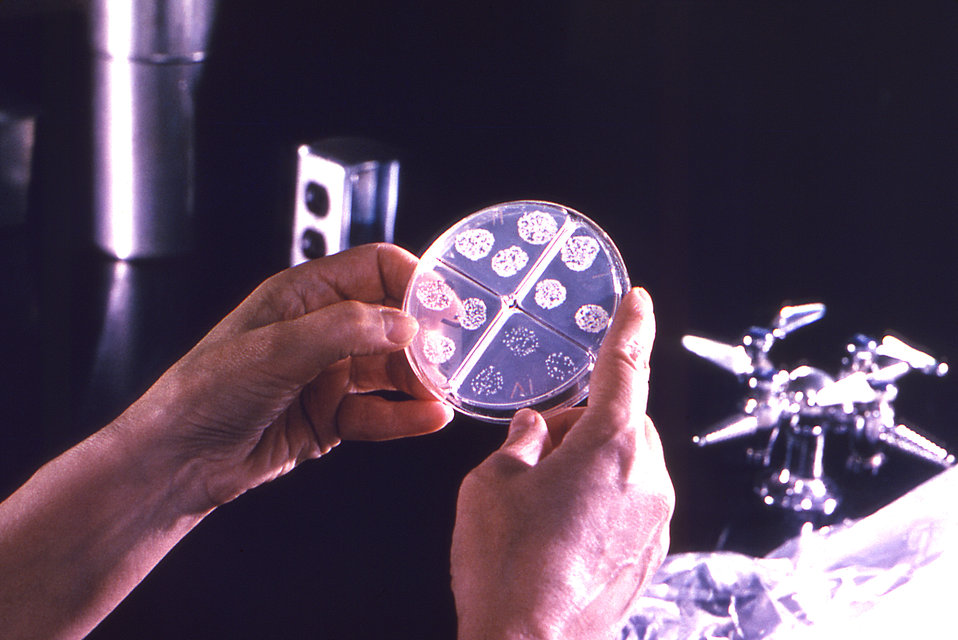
This image depicts the hands of a laboratorian holding a quad plate, which having been inoculated with a culture medium, displayed varying amounts of colonial growth in each of its four quadrants.